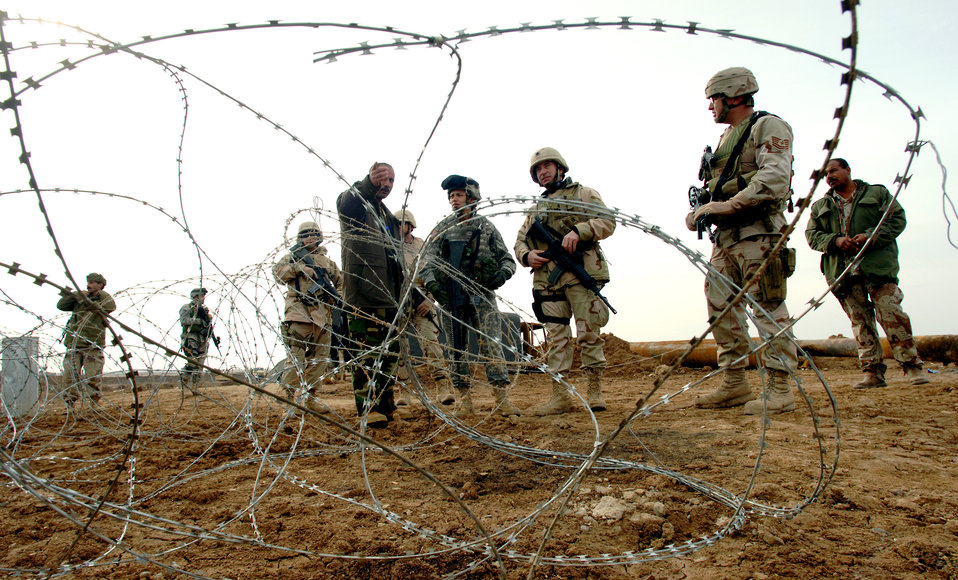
Infrastructure inspection

KIRKUK, Iraq (AFPN) -- Lt. Col. Thomas Brown (center) and Tech. Sgt. Billy Tramel (right) speak to Iraqi pipeline protection officers at a canal crossing. They talked about recent damage to the pipeline and security challenges. Colonel Brown is commander of the 732nd Expeditionary Civil Engineer Squadron. Sergeant Tramel is a member of the squadron's petroleum oil and infrastructure team, or POInT.